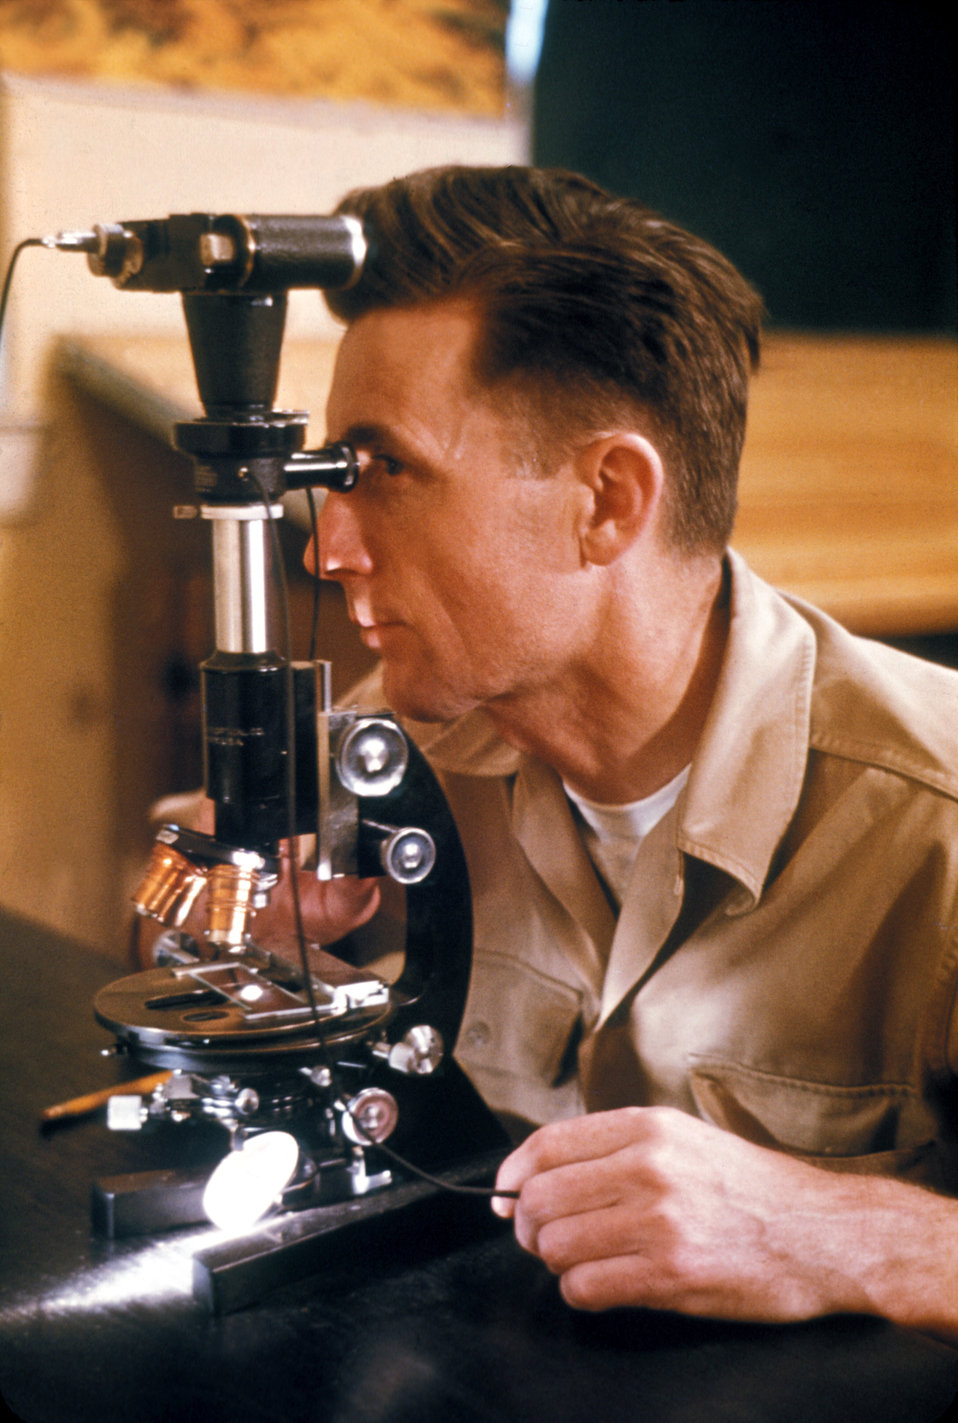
A lab technician taking a photomicrograph during a plague study, 1965.